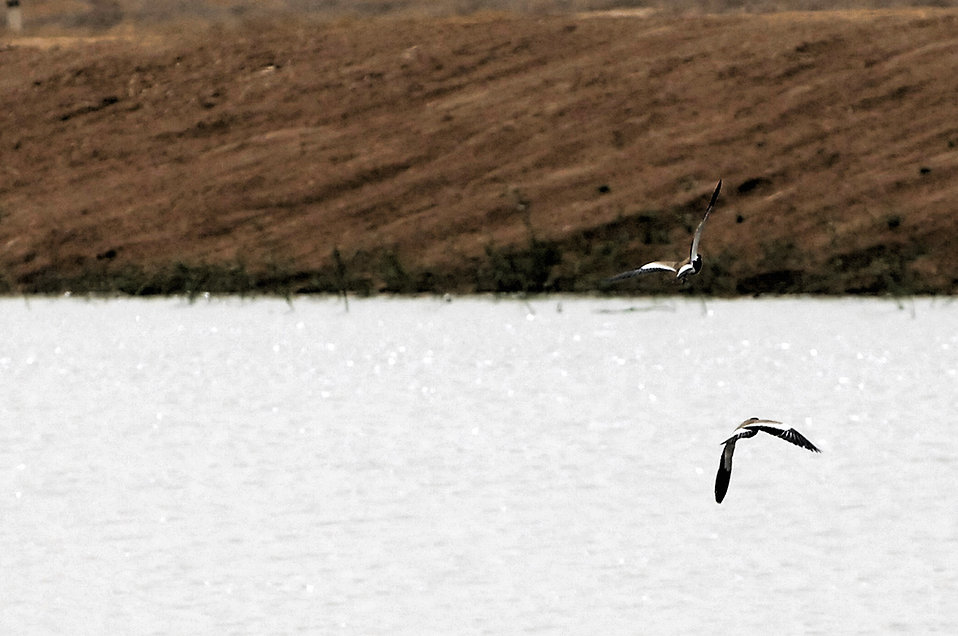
Study of Iraqi birds to help reduce aircraft mishaps

Two red-wattled plovers fly above a pool of water at Balad Air Base, Iraq. To reduce the number of collisions between birds and aircraft, members of the 332nd Air Expeditionary Wing Safety Office depredate the birds on the base through the Bird Aircraft Strike Hazard program. On May 3, the remains of whole, depredated birds were shipped from the base to the Smithsonian Institution, National Museum of Natural History, Feather Identification Laboratory in Washington, D.C., for the birds to be analyzed by scientists. This marks the first shipment of whole bird remains to be sent from Iraq to the Smithsonian.